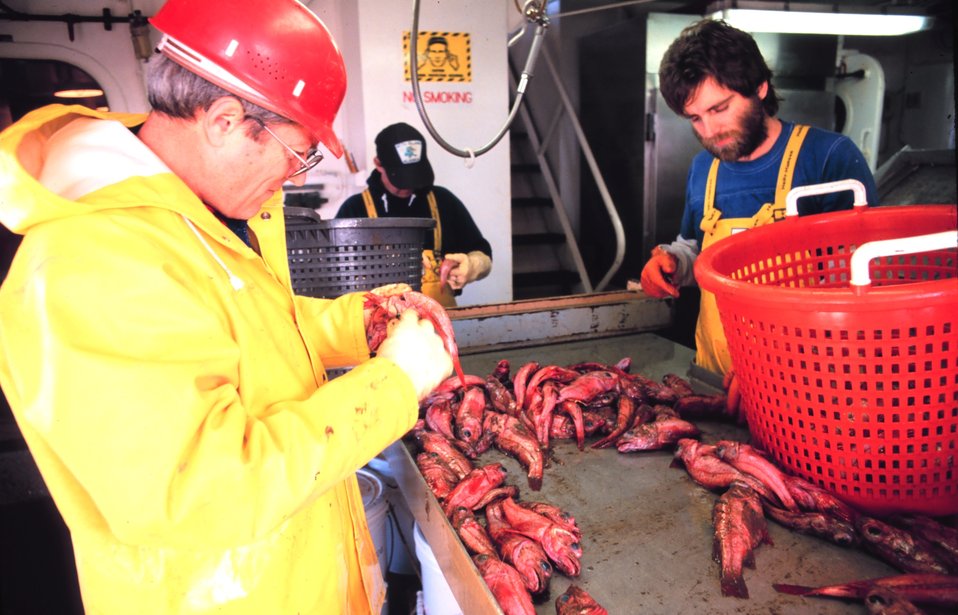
Scientists sorting and sampling redfish